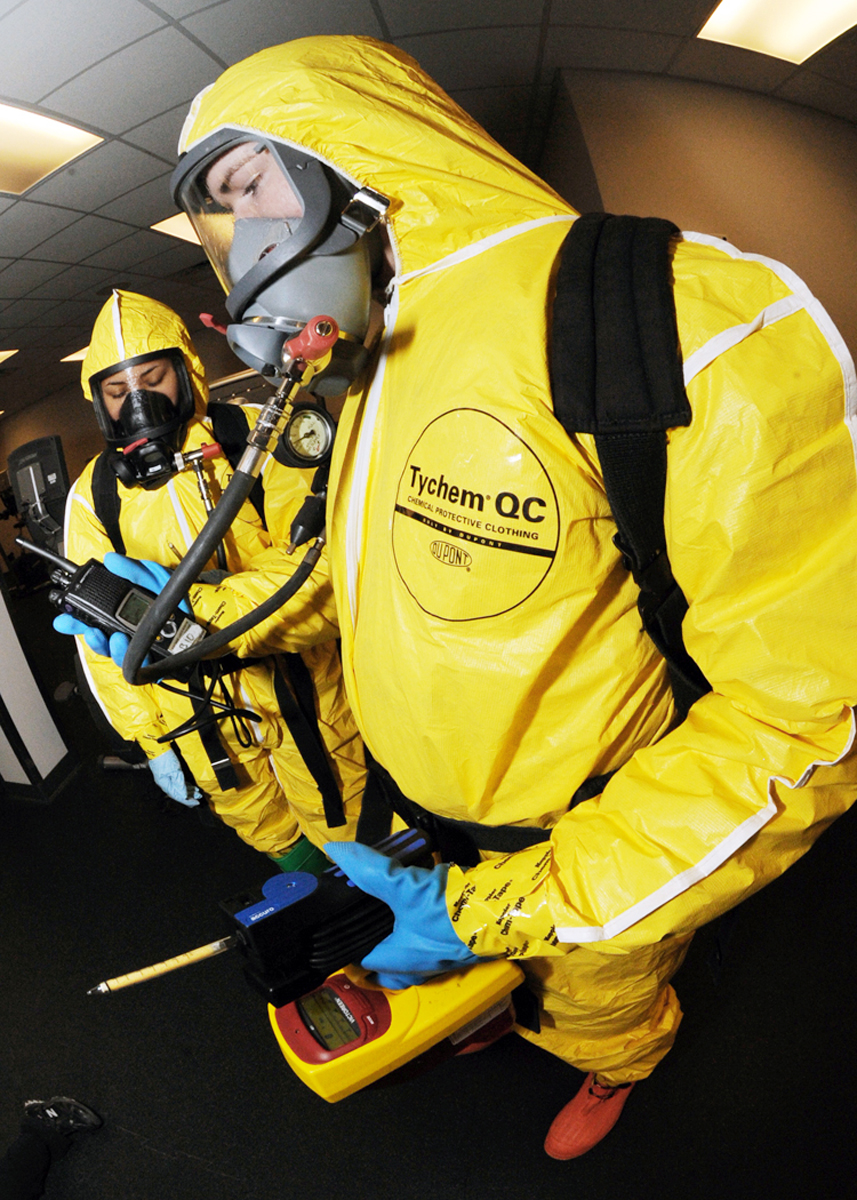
Shooter, sirens prep Minot Airmen

Senior Airman Jimmy VanHuss and Airman 1st Class Anjelika Rodriguez use drager tubes to detect chemicals in a contaminated area during the major accident response exercise March 26, 2010, at Minot Air Force Base, N.D. The exercise prepared base members for possible real-world situations as well as testing communication and emergency procedures. Airmen VanHuss and Rodriguez are both 5th Medical Operations Squadron bioenvironmental engineering technicians.